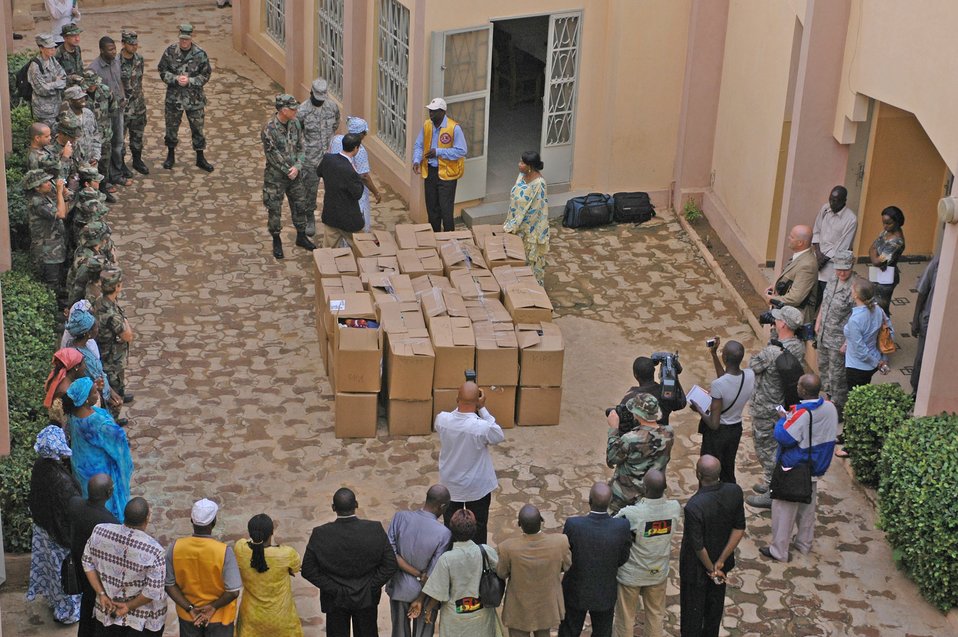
Airmen donate clothes to Malians

Airmen from Aviano Air Base, Italy, present boxes of donated clothes, shoes and toys to a local orphanage in Bamako. When Airmen from Aviano found out they were going to Mali for a medical mission, they joined efforts with the local community to gather more than 2,500 pounds of donations to give to the Malians.